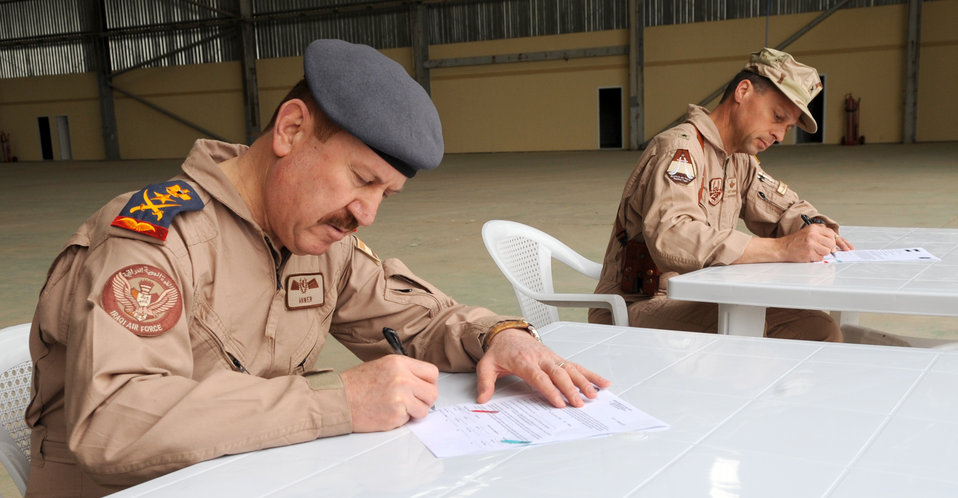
Hangar transfer

Staff Lt. Gen. Anwer Ameen, Iraqi air force commander, and Brig. Gen. Scott Hanson, 321st Air Expeditionary Wing commander, and sign a letter of acceptance and transfer March 10, 2010, for the newly restored Skeleton Hangar on Kirkuk Regional Air Base, Iraq. Members of the Iraq Training and Advisory Mission-U.S. Air Force and the Iraqi air force participated in the ceremony.